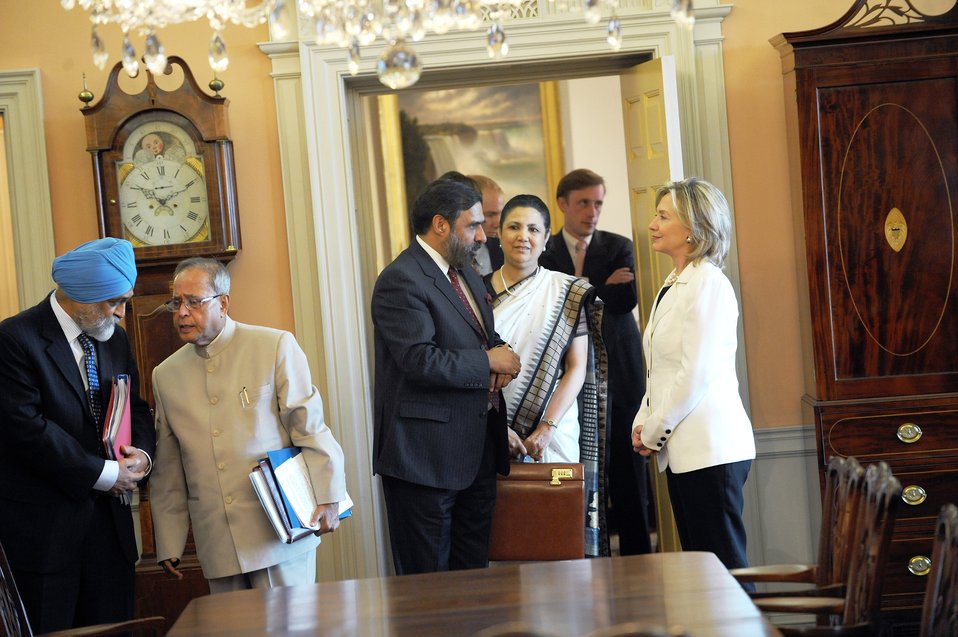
Secretary Clinton Meets With Indian Commerce Minister Anand Sharma

U.S. Secretary of State Hillary Rodham Clinton meets with Indian Commerce Minister Anand Sharmas following a bilateral meeting with Indian Finance Minister Pranab Mukherjee at the U.S. Department of State in Washington, D.C., on June 22, 2010.